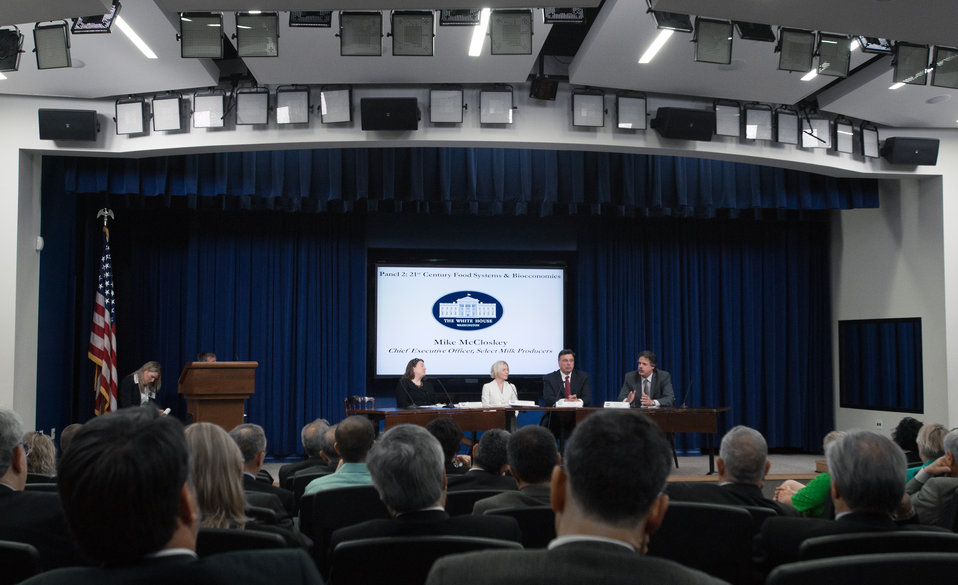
Select Milk Producers Chief Executive Officer (CEO) Mike McCloskey (right) speaks at the Innovation Center For U.S. Dairy Sustainability Council Meeting on Wednesday, Apr. 24, 2013, at the White House, in Washington, D.C.